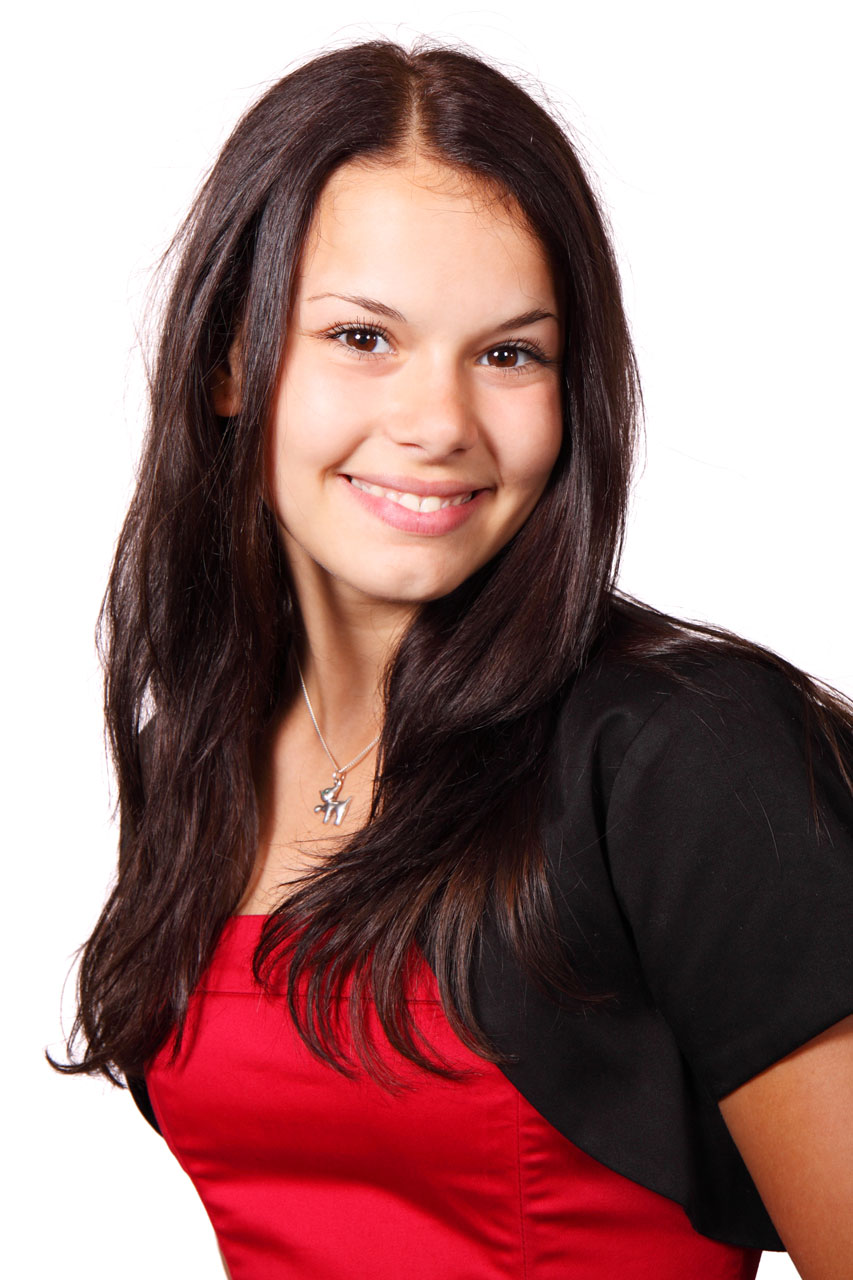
Fashion girl

Young woman in nicely dressed.